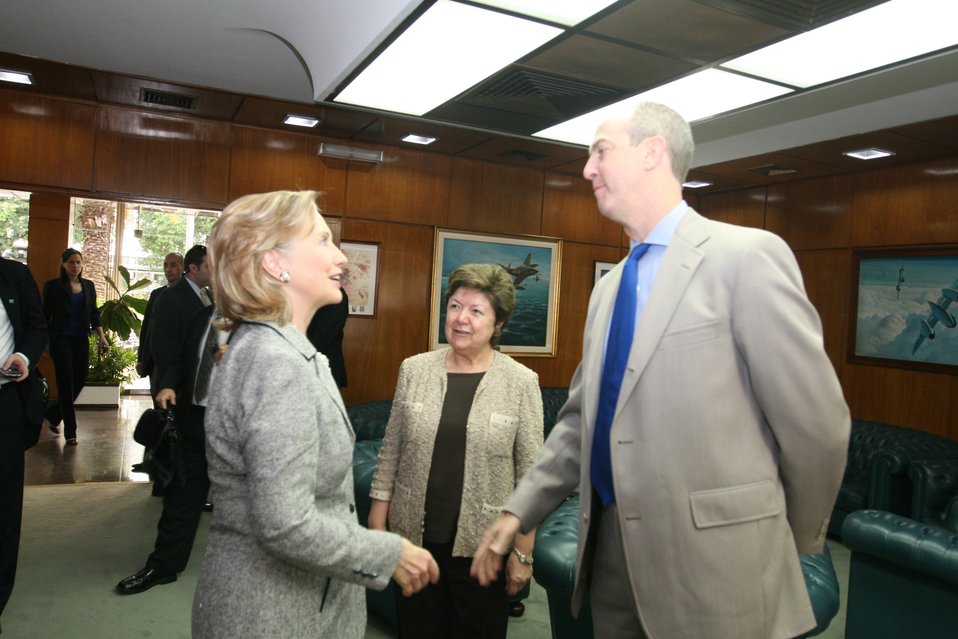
Secretary Clinton Visits Buenos Aires, Argentina

U.S. Secretary of State Hillary Rodham Clinton
Buenos Aires, Argentina March 2, 2010.